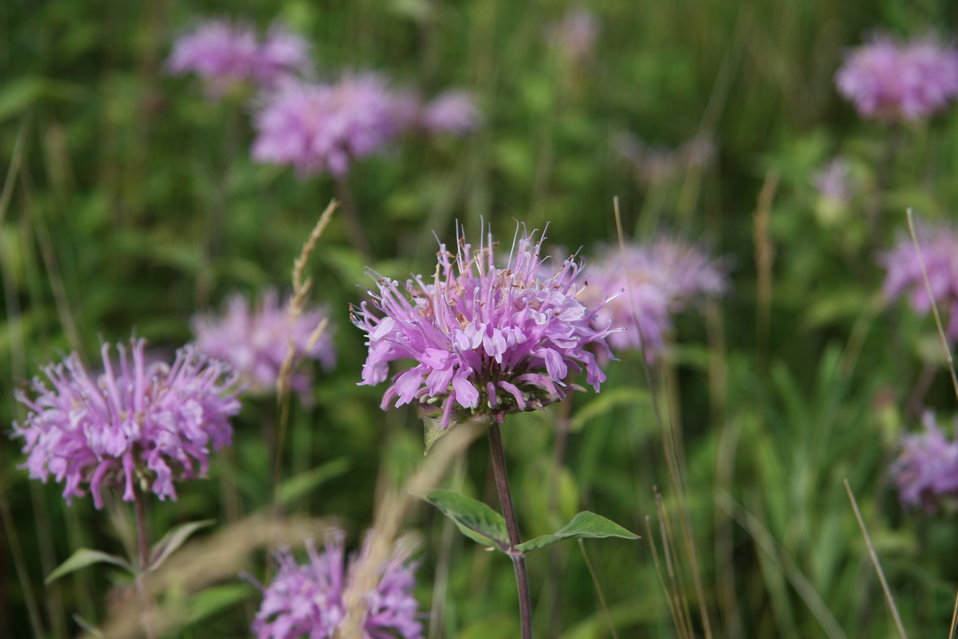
Wild Bergamots seen on a Wildflower Walk held on Munch's Coulee National Recreation Hiking Trail at Des Lacs National Wildlife Refuge in North Dakota.